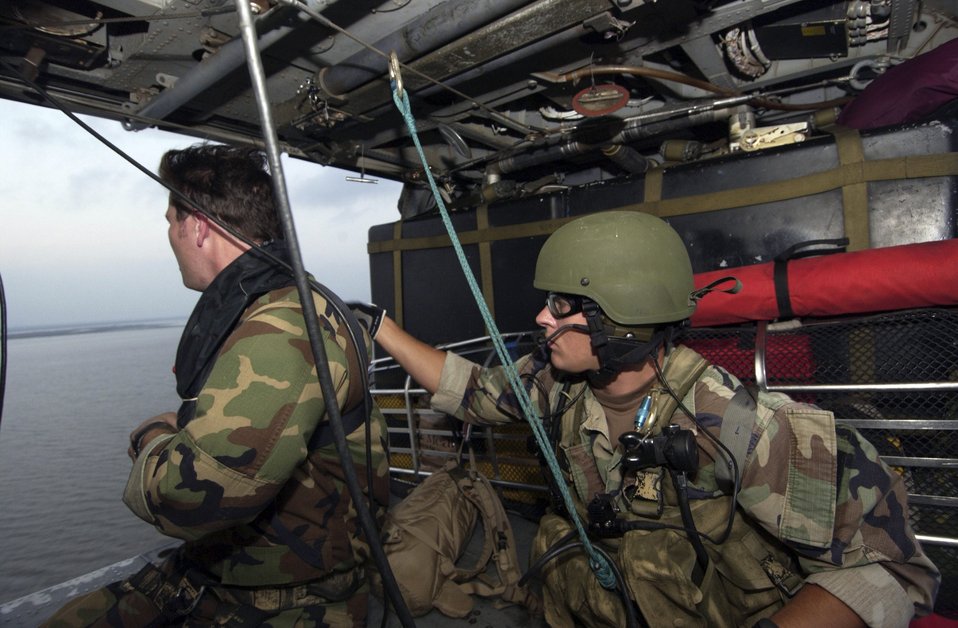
Search and rescue

RANDOLPH AIR FORCE BASE, Texas -- Senior Airman Arthur Zingler, a 38th Rescue Squadron pararescueman, helps fellow "PJ" Staff Sgt. Mark Panzera check his rescue equipment while en route to a search area over southern Louisiana. Both Sergeant Panzera and Airman Zingler deployed here from Moody Air Force Base, Ga.